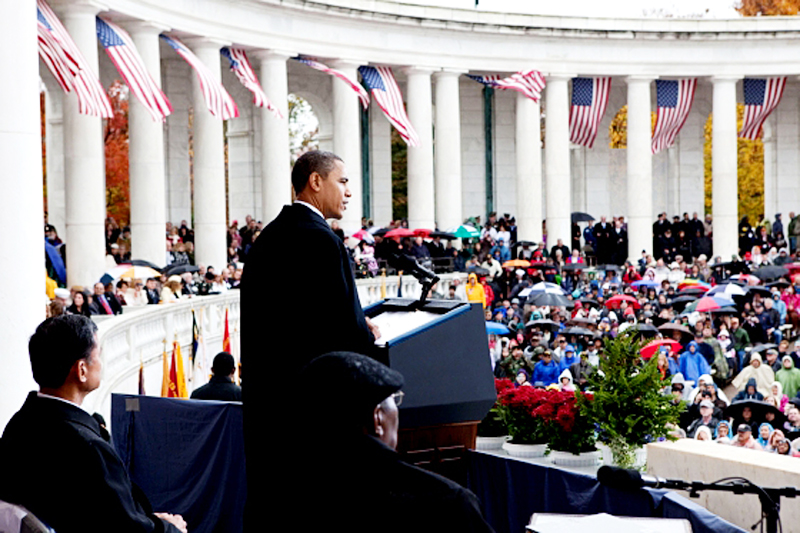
Obama's pledge: America will fulfill obligations to veterans

President Barack Obama addresses the audience during a ceremony Nov. 11, 2009, at Arlington National Cemetery in Virginia to mark Veterans Day.